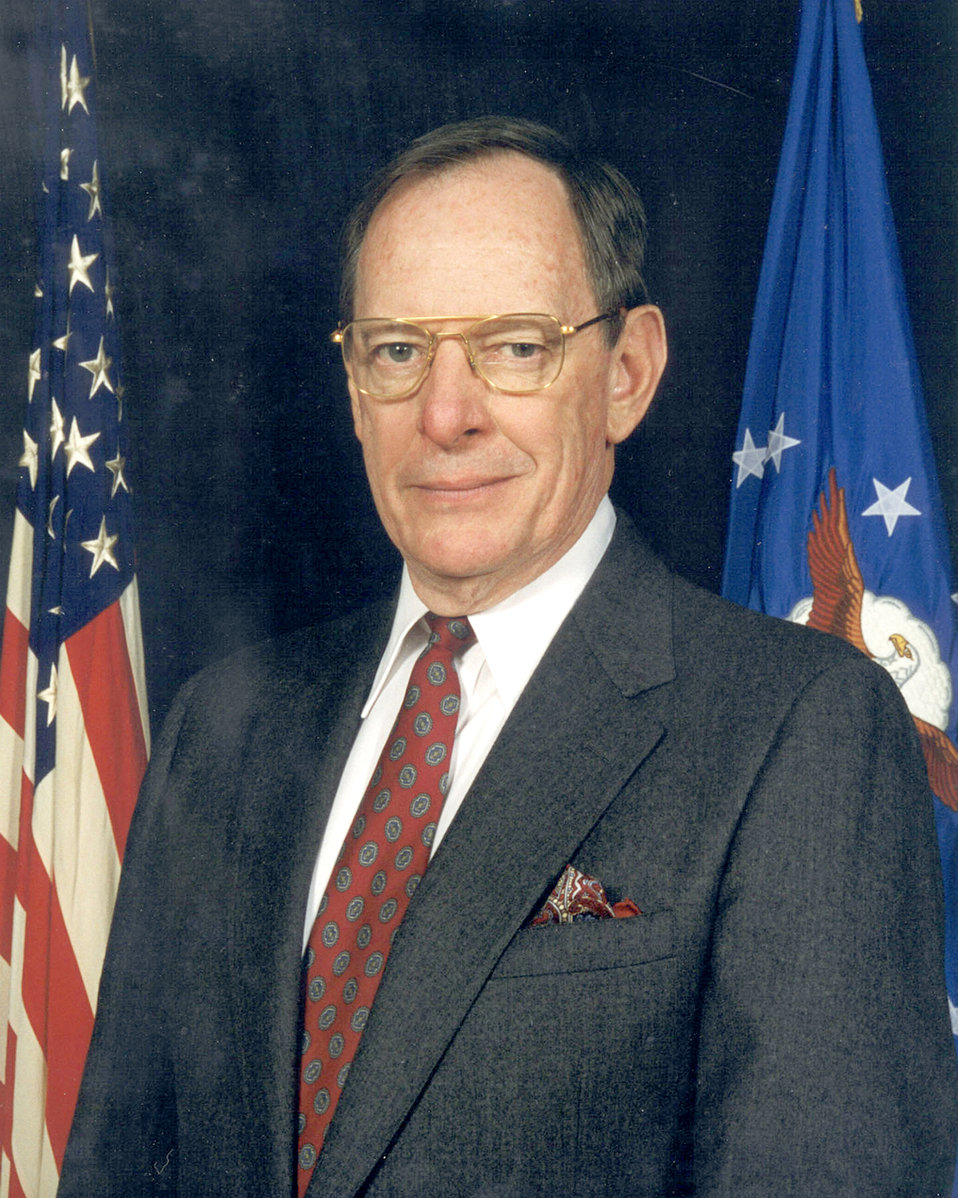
Air Force museum director to receive national award

Maj. Gen. (Ret.) Charles D. Metcalf is the director of the National Museum of the Air Force.